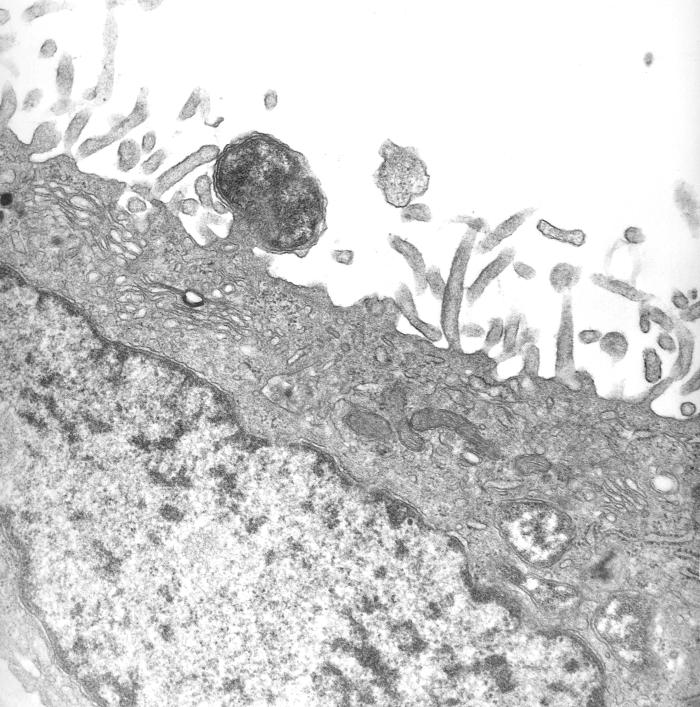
This 1976 transmission electron micrograph (TEM) depicted a hypertrophic peritoneal mesothelial cell of mouse that had been experimentally infected intraperitoneally with Orientia tsutsugamushi rickettsial micro-organisms. This micrograph showed one organism as it was in the process of budding from the luminal cell surface, still covered by a third layer, consisting of the host cell's plasma membrane. Others are visible free within the host cell's cytoplasm.